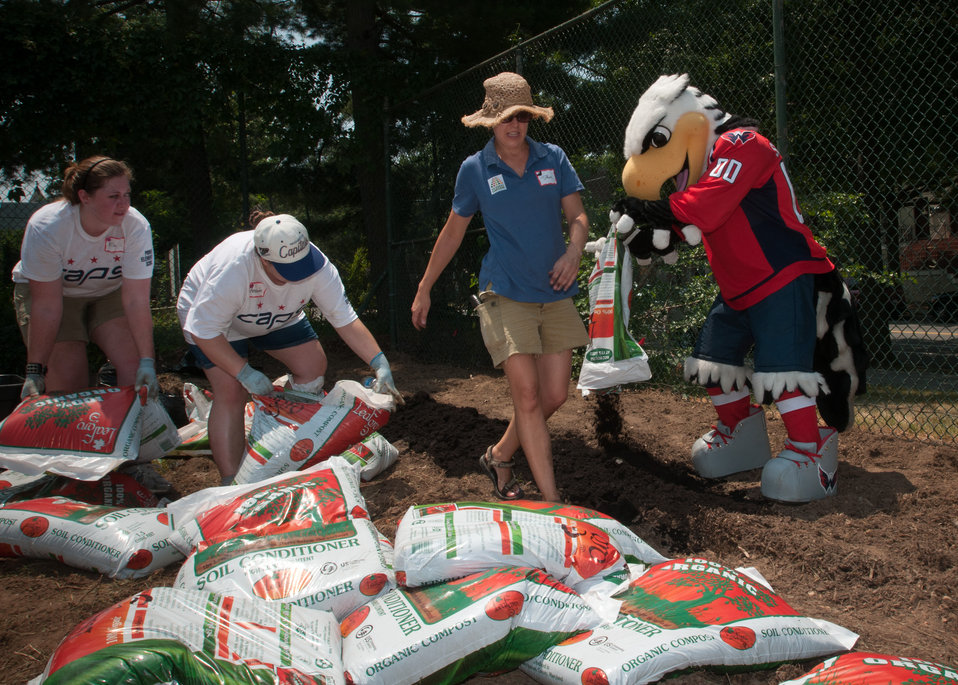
U.S. Department of Agriculture Farm Services Agency Agricultural Economist and Executive Master Gardner Tiffany Arthur (second from right) leads a mulching detail that included Washington Capitals’ mascot Slapshot helping in the People’s Garden, at William B. Powell Elementary School on Thursday, June 9, 2011 in Washington, DC.
Volunteers from U.S. Department of Agriculture People’s Garden Executive Master Gardener program and Washington Capitals hockey organization, along with defenseman Jeff Schultz, and mascot Slapshot transformed a grassy corner of the school playground into a habitat garden and outdoor learning area. Executive Master Gardeners led the volunteer project teams. The Washington Capitals donated new tools; tool shed; garden materials; lunch; most of the volunteers and more. The completed projects included a walking path; tiling of garden plots; planting a bird habitat garden, pollinator garden and native grasses; caterpillar and butterfly plaques; hummingbird and bat house, and tool shed. The garden will later include a picnic area, outdoor classroom, hummingbird garden, Monarch watch garden, native bee garden, and birdbath. USDA challenges its employees to establish People's Gardens at USDA facilities worldwide or on this case, help communities create gardens. People's Gardens vary in size and type, but all have a common purpose - to help the community and the environment.